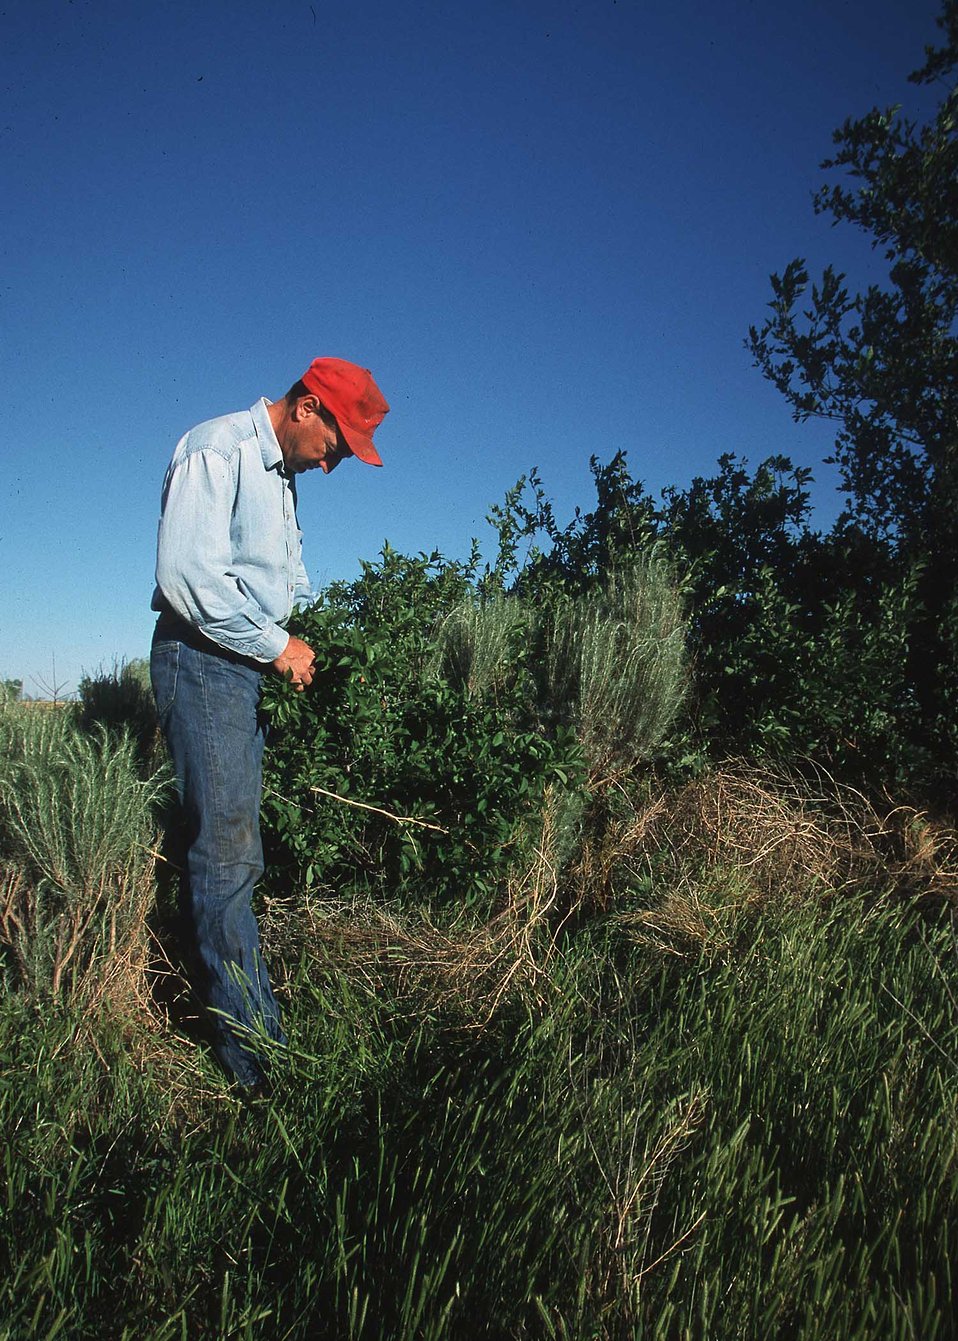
Eastern New Mexico farmer inspects plant in a wildlife habitat area.